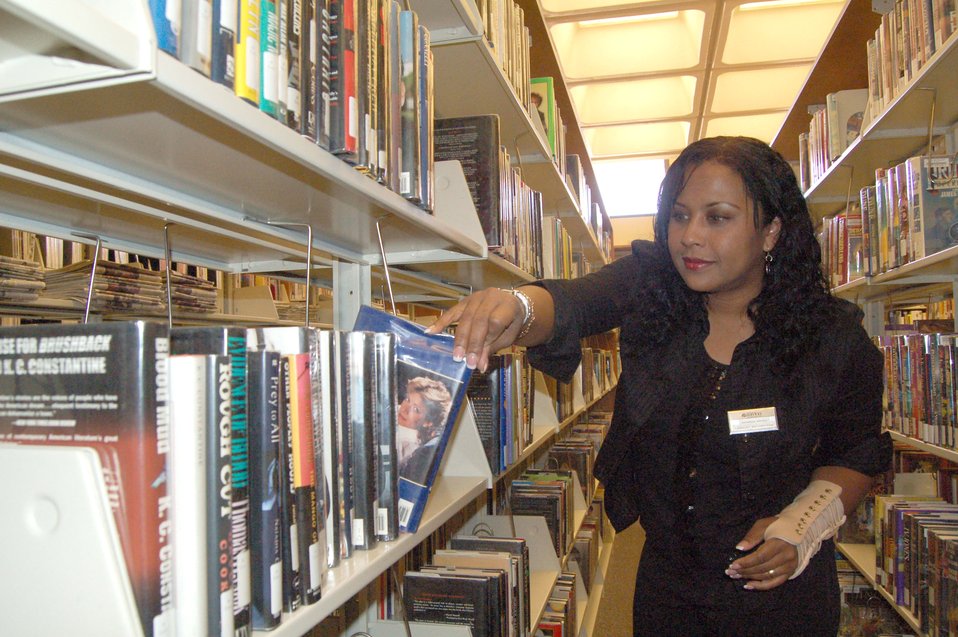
5-Star program recognizes Services' best

Peronica Hunt organizes books on a shelf Feb. 21 at the Edwards Air Force Base, Calif., main library. The library was among 87 programs Air Force-wide achieving a Five Star rating from the Air Force Services Agency. It was the third consecutive year the distinction was earned by the Edwards Main Library, which was also the best in Air Force Materiel Command for fourth year in a row. Ms. Hunt is a library technician.